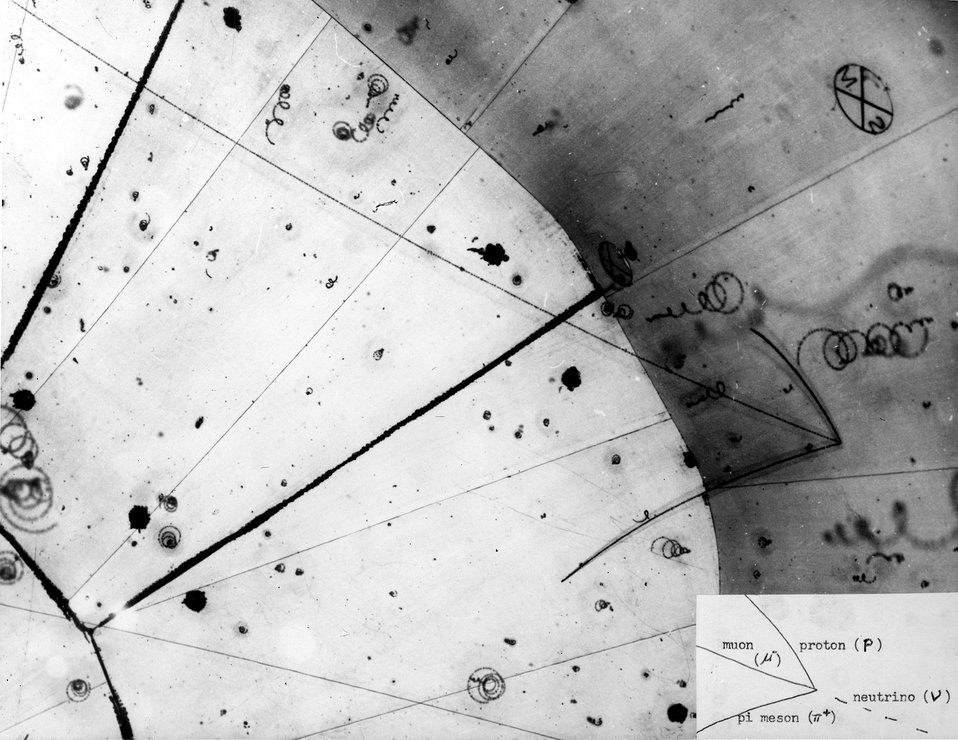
This photo is of the first neutrino-induced reaction in pure hydrogen produced in the 12-foot bubble chamber.
c.1971